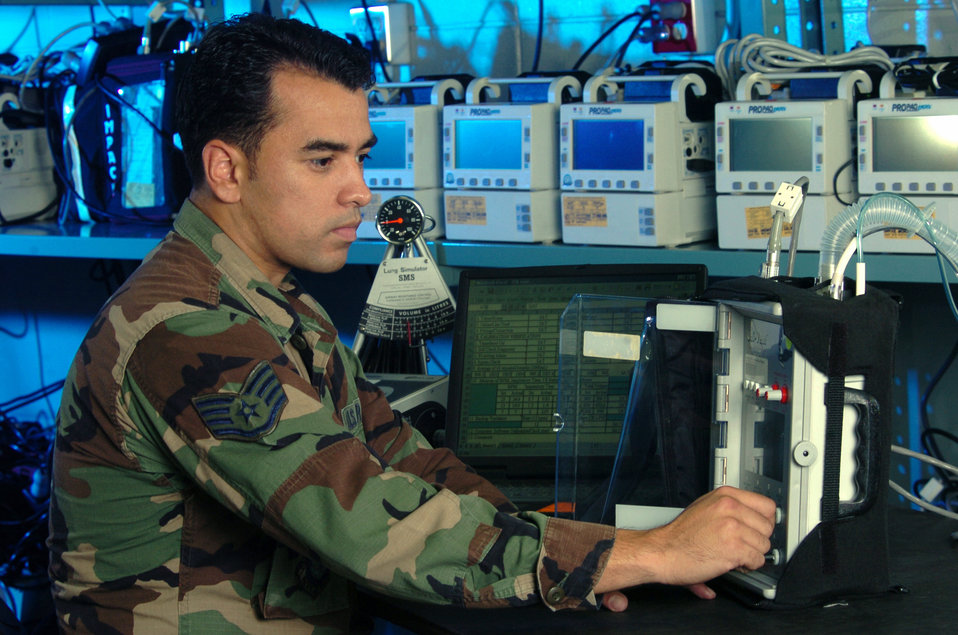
Medical maintainers

YOKOTA AIR BASE, Japan -- Staff Sgt. Sergio Chinchilla calibrates a ventilator during an inspection. He is a biomedical equipment technician for the 374th Medical Support Squadron's medical equipment repair center element here. The element staff is responsible for acquiring, installing, maintaining and disposing of medical equipment for the base's 374th Medical Group. They also provide intermediate equipment maintenance for various bases throughout the Pacific region.